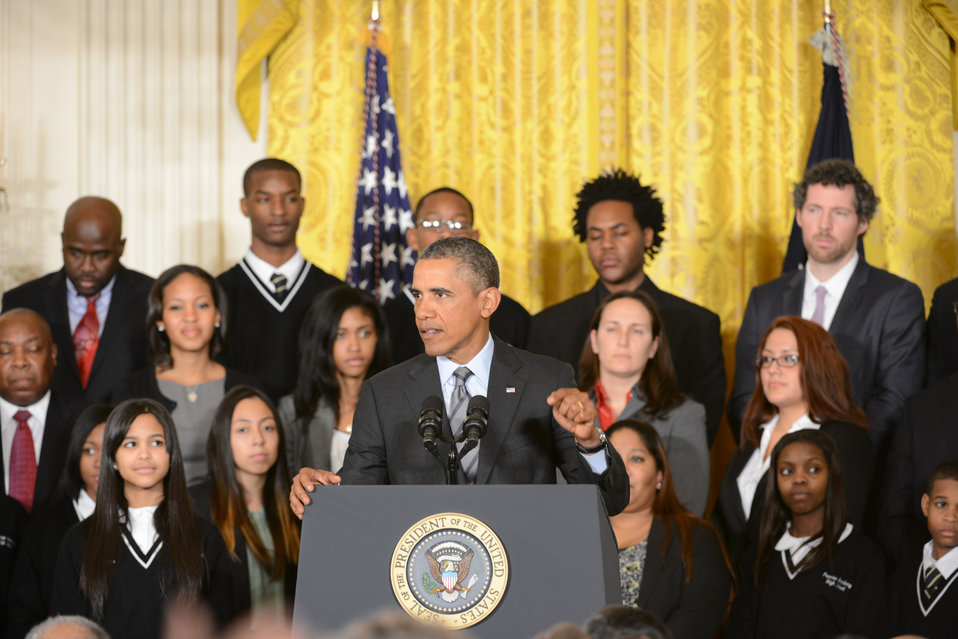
President Barack Obama announces the first five “Promise Zones,” located in San Antonio, TX, Philadelphia, PA, Los Angeles, CA, Southeastern Kentucky, and the Choctaw Nation of Oklahoma.